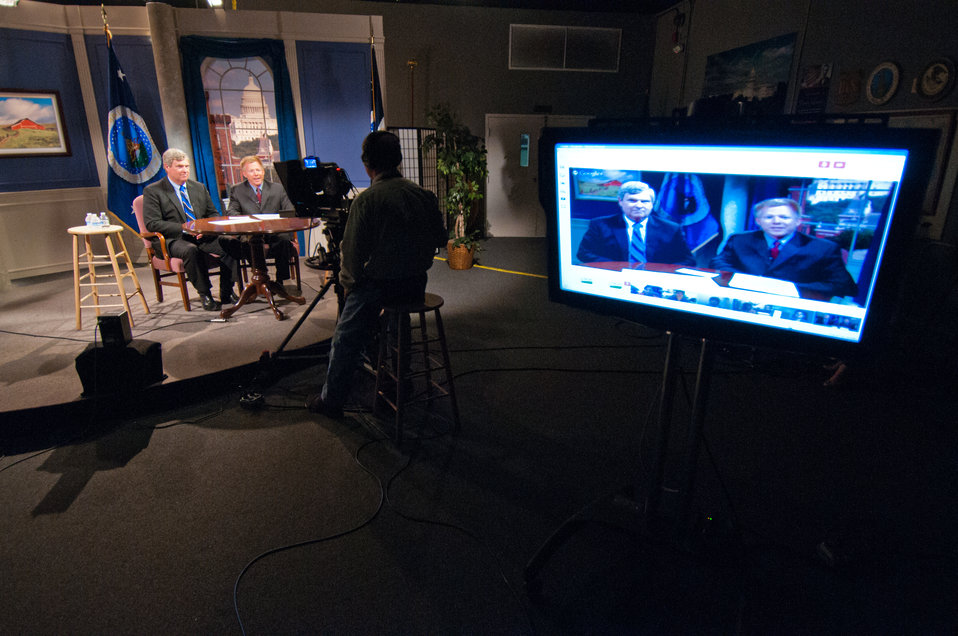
Agriculture Secretary Tom Vilsack and U.S. Department of Agriculture (USDA) StrikeForce Initiative Director Max Finberg participate in a Google Hangout to discuss StrikeForce opportunities, success stories and ways communities may get involved at USDA in Washington, D.C. on Monday, Jun. 17, 2013. The StrikeForce Initiative targets rural areas of persistent poverty where USDA staff can work with state, local and community officials to increase awareness of programs and services that help to promote economic development and job creation.